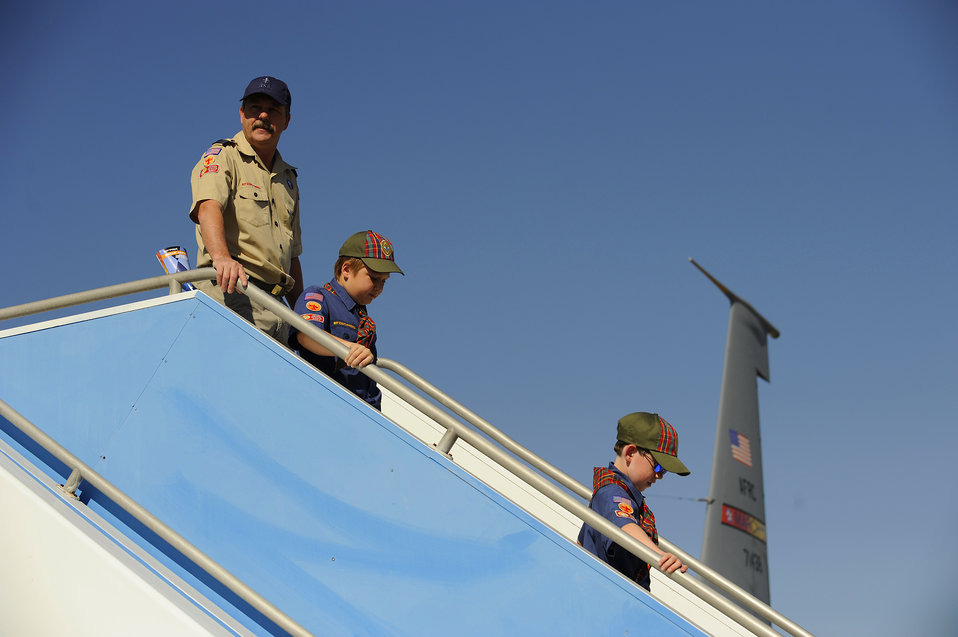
Aerospace exhibition entertains, informs during Air Force Week Los Angeles

Cub scout members from Pack 120, Long Beach, Calif., take a tour of a KC-135 Stratotanker on Nov. 15 at the Wings Over Long Beach Air Expo for Air Force Week Los Angeles. Air Force Week Los Angeles includes flight demonstrations and interactive community events, providing an up close and personal look at the men and women of the Air Force serving worldwide in the defense of freedom. Air Force Week Los Angeles is Nov. 14 to 21 and has events throughout the area.